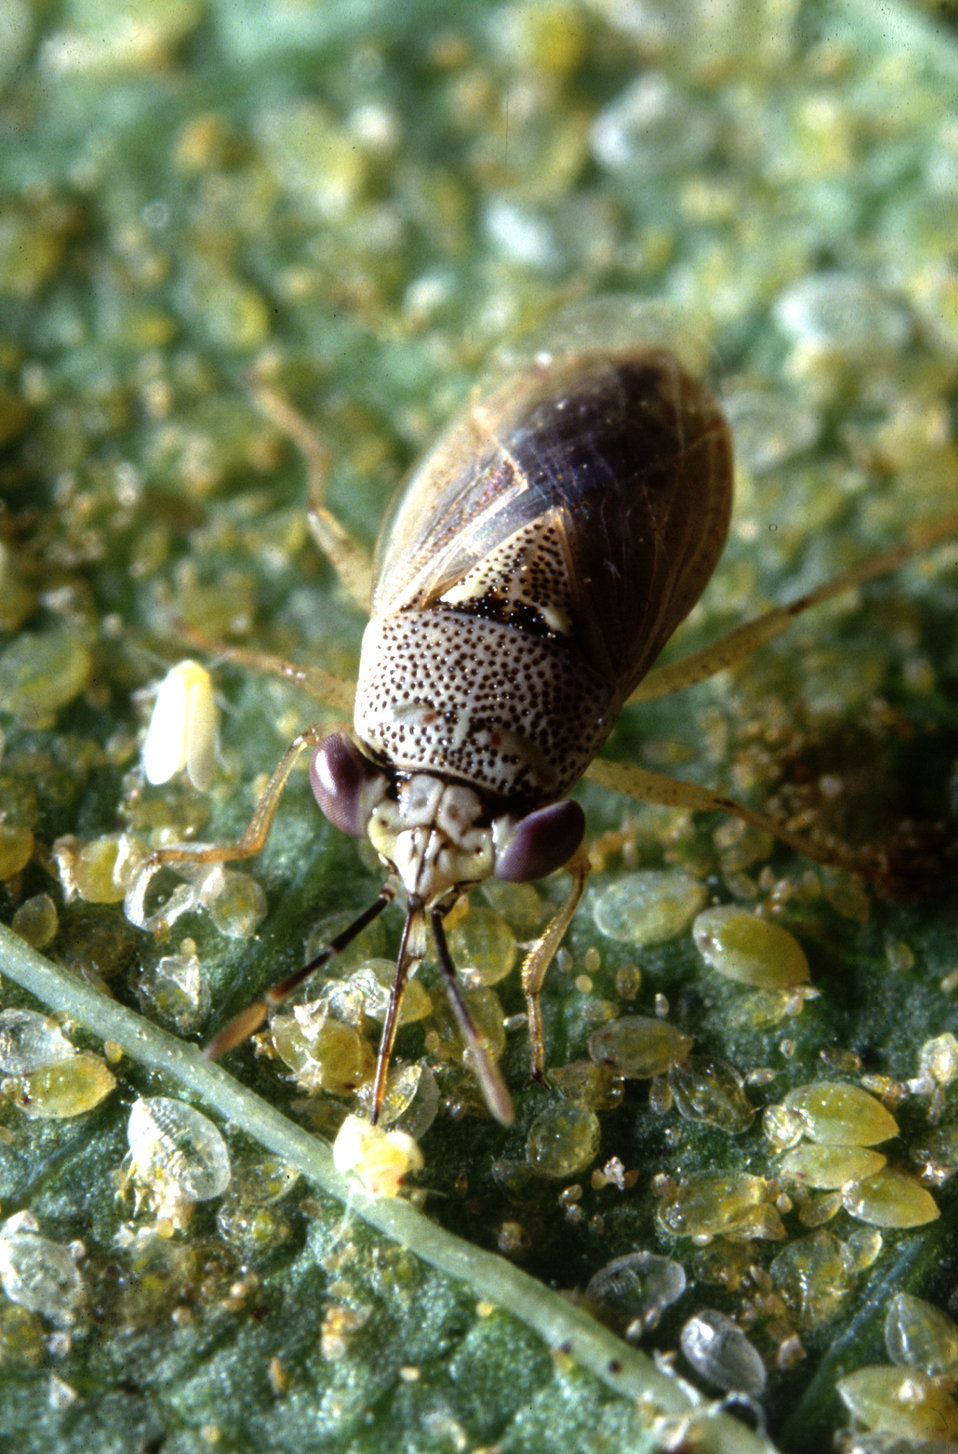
The big-eyed bug glues a hapless whitefly to a leaf and can later devour its prey at its leisure.